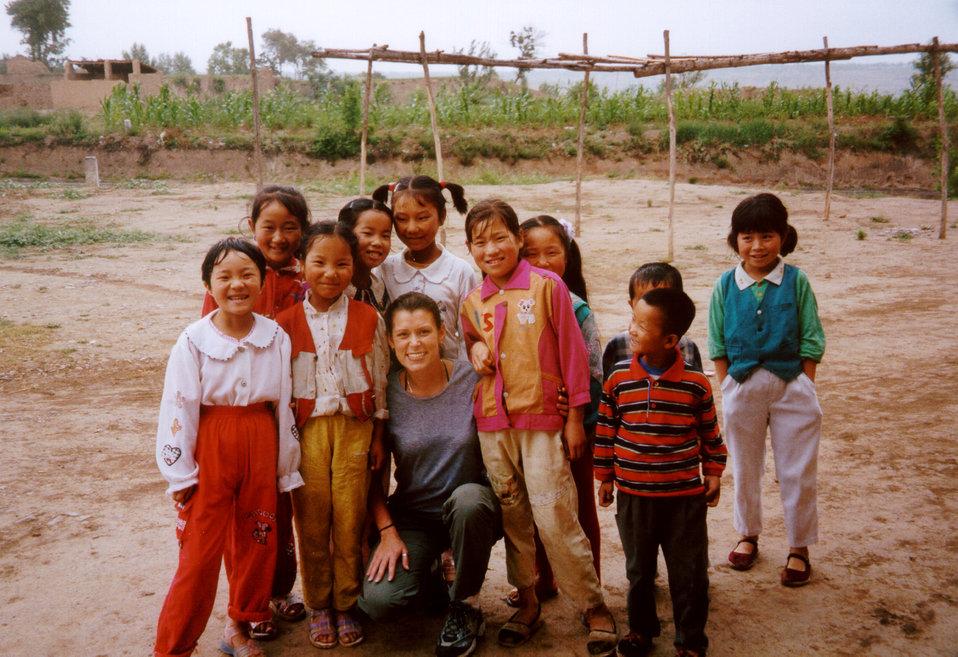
This is Brittney Anderson-Spilker of the CDC (Cntr) among children of Qili Village in northwest China.